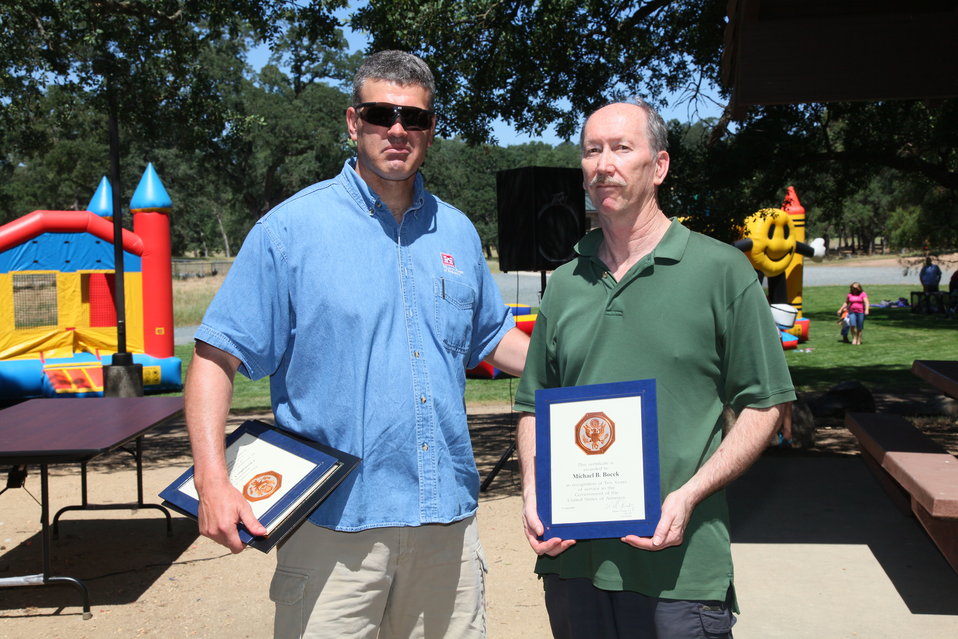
2011 Annual Picnic